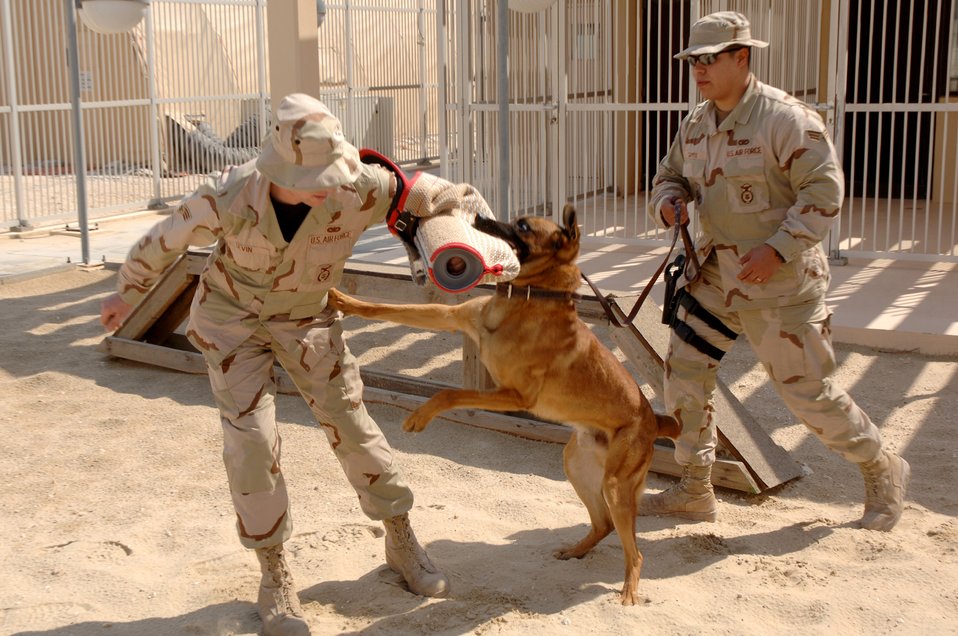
Partners in the desert

SOUTHWEST ASIA (AFPN) -- Senior Airman Martin Campos (right) conducts aggression training with his military working dog, Rico, and Senior Airman Brooks Sevin at a deployed location Feb. 24. Both Airmen and Rico are with the 379th Expeditionary Security Forces Squadron.